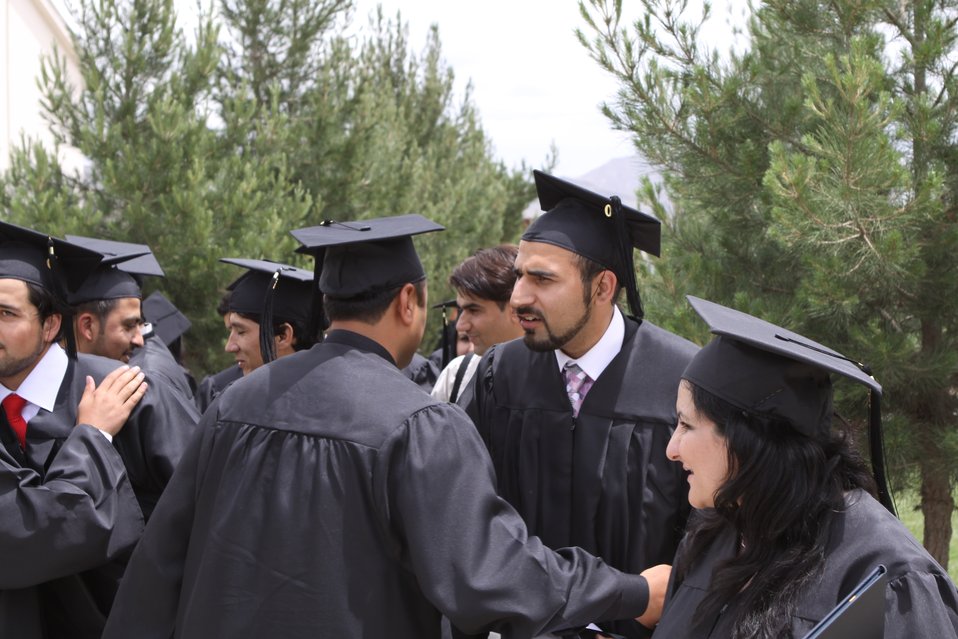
100526 AUAF Graduation 338